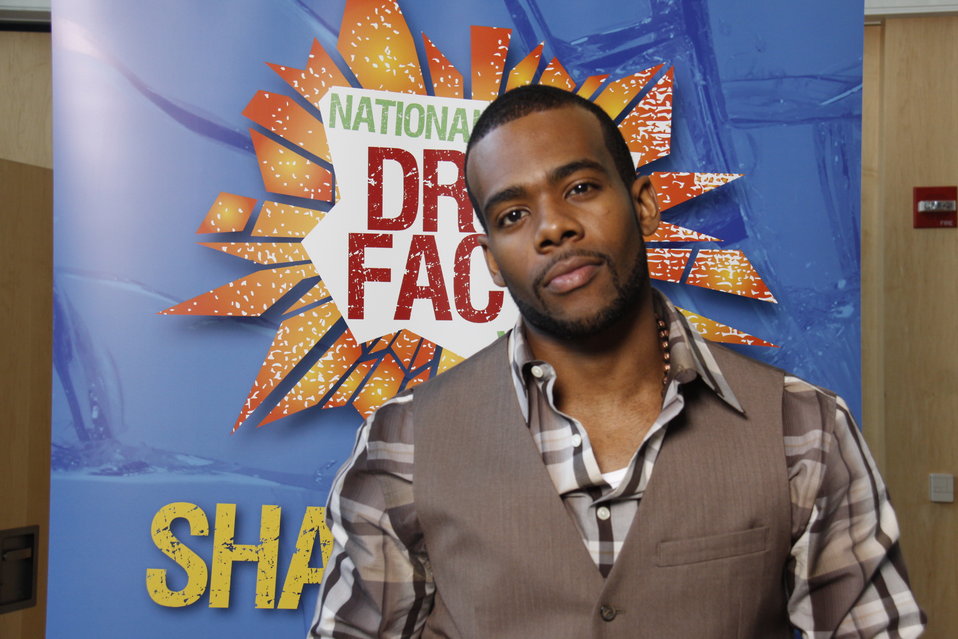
NDFW Mentor Event